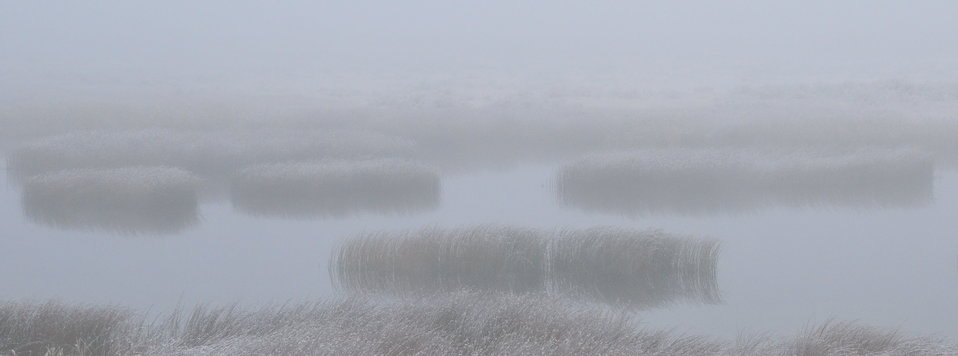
Bullrush in the Fog at Seedskadee NWR

Fog settles in on wetlands at Seedskadee NWR.